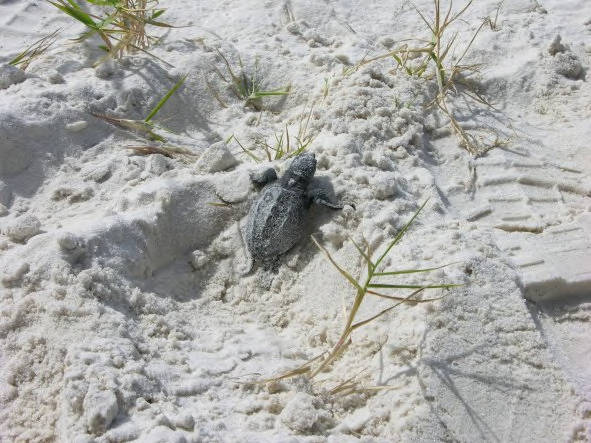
Kemps Ridley sea turtle hatchling, Alabama Credit: USFWS